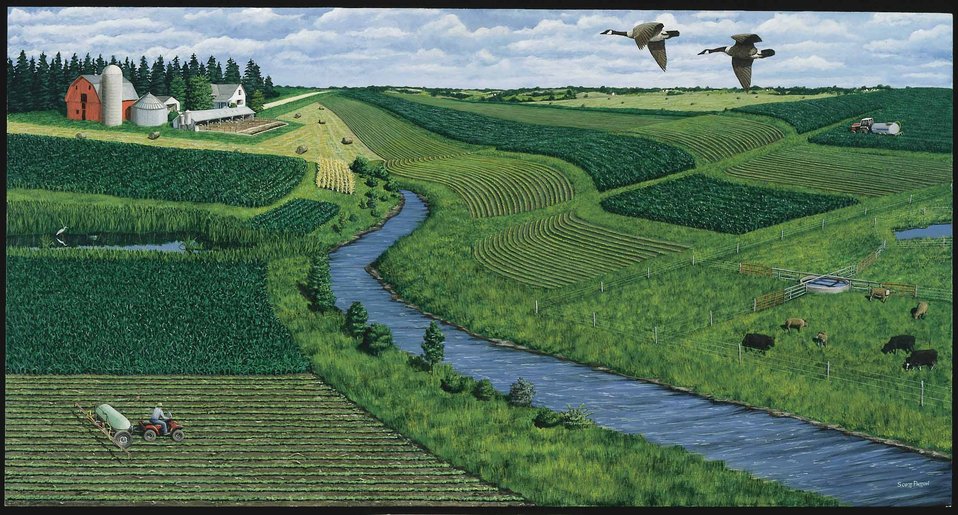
Art depiction of land protected with conservation buffers and other practices.